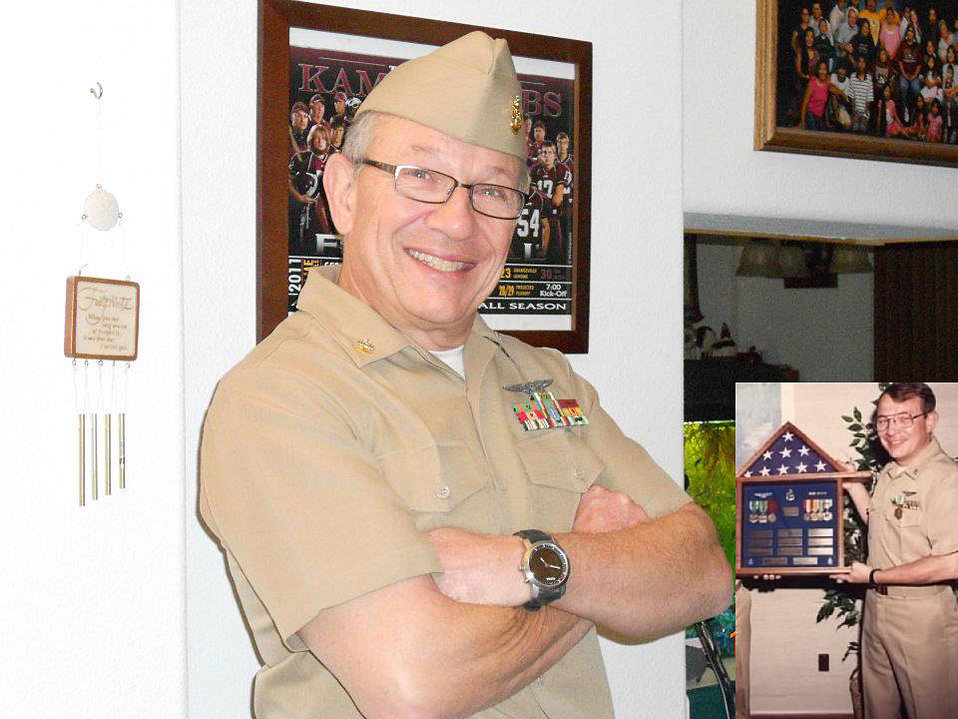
Randy Bowen, an Information Technology Specialist at Dworshak Fisheries Complex, served more than 22 years in the U.S. Navy from 1969 until 1991. He is a Vietnam and Operation Desert Storm veteran.